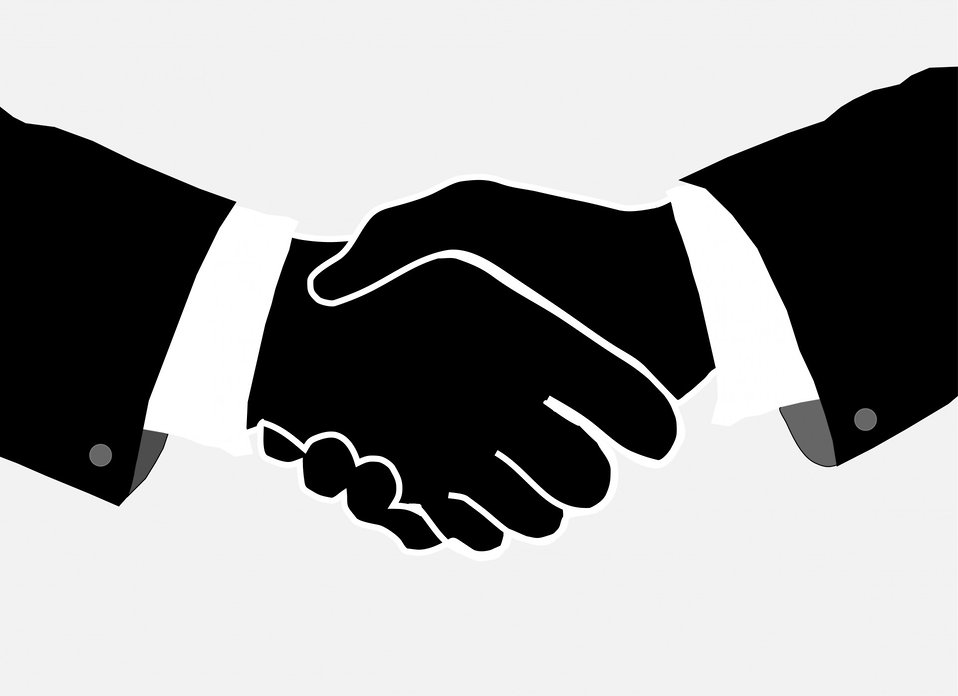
Handshake

Two business men shaking hands illustration.